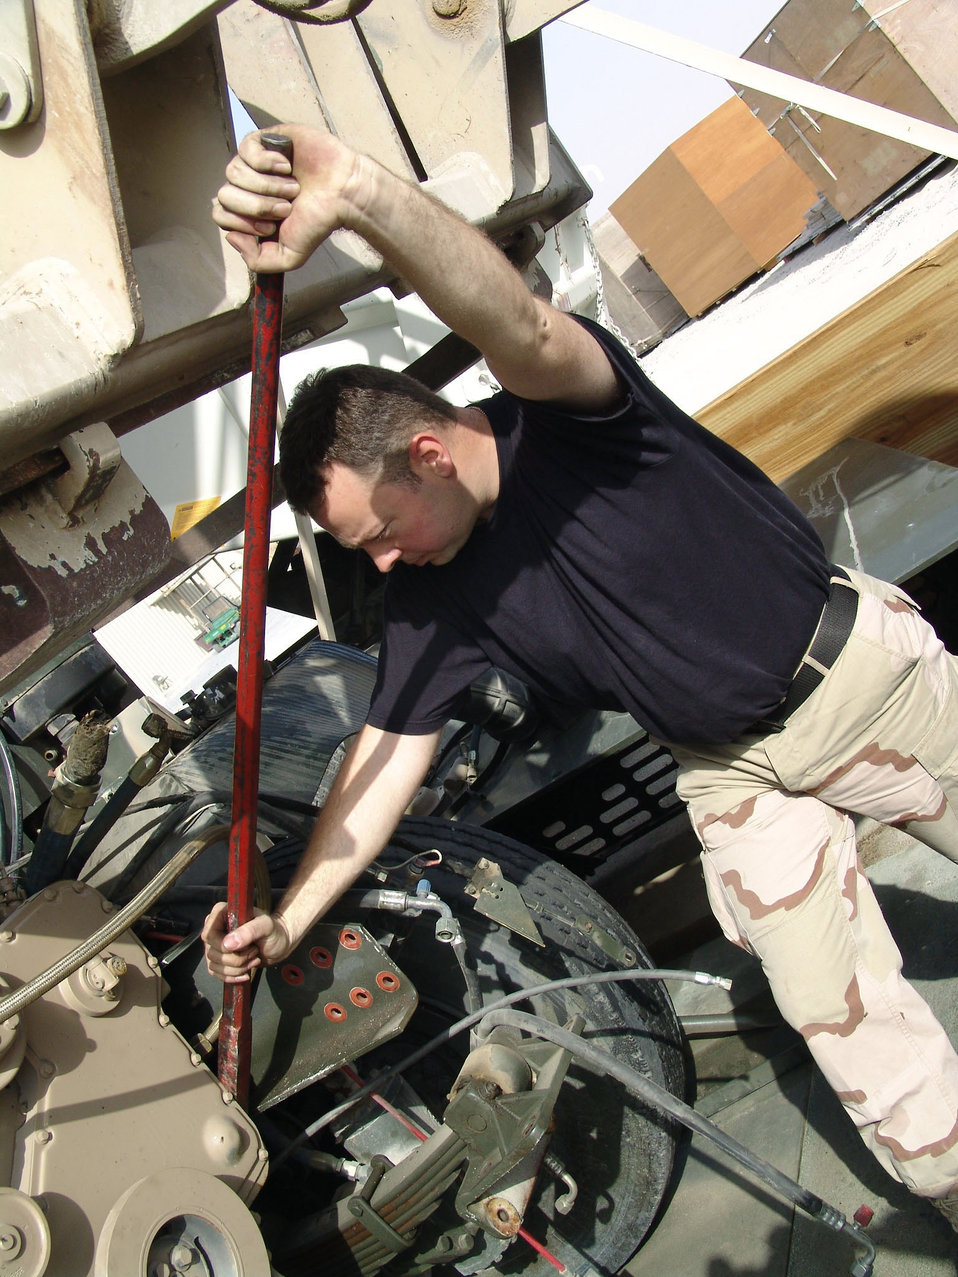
Fix it, fellas

SOUTHWEST ASIA -- Master Sgt. Michael Bares pushes a 1,700-pound engine into position during its installation on a refueling truck at a forward-deployed location. Sergeant Bares and other Airmen of the 386th Expeditionary Logistics Readiness Squadron's vehicle maintenance flight repair nearly 180 vehicles a month.